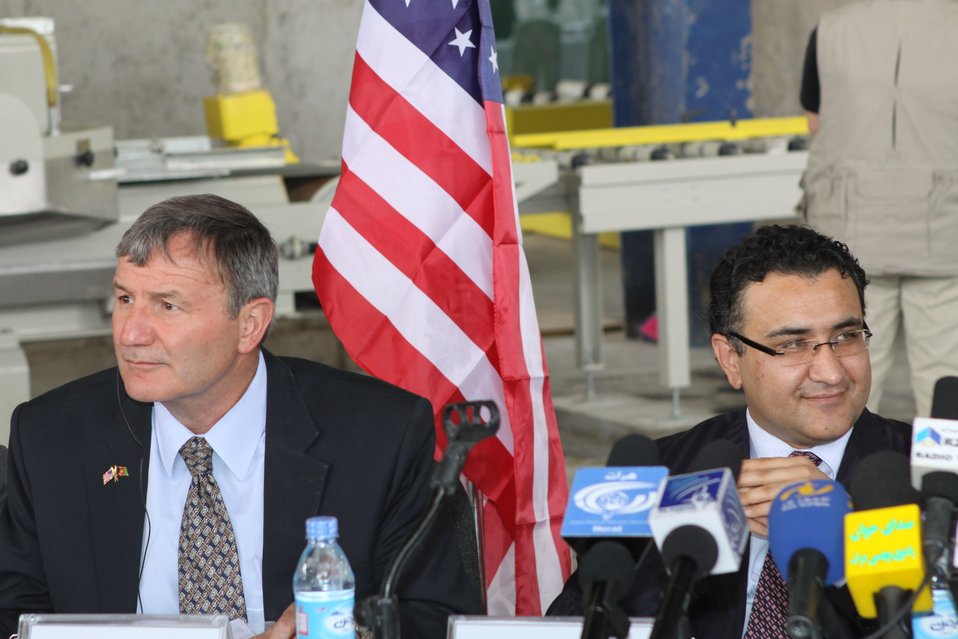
100525 Hirat Marble Conference 313